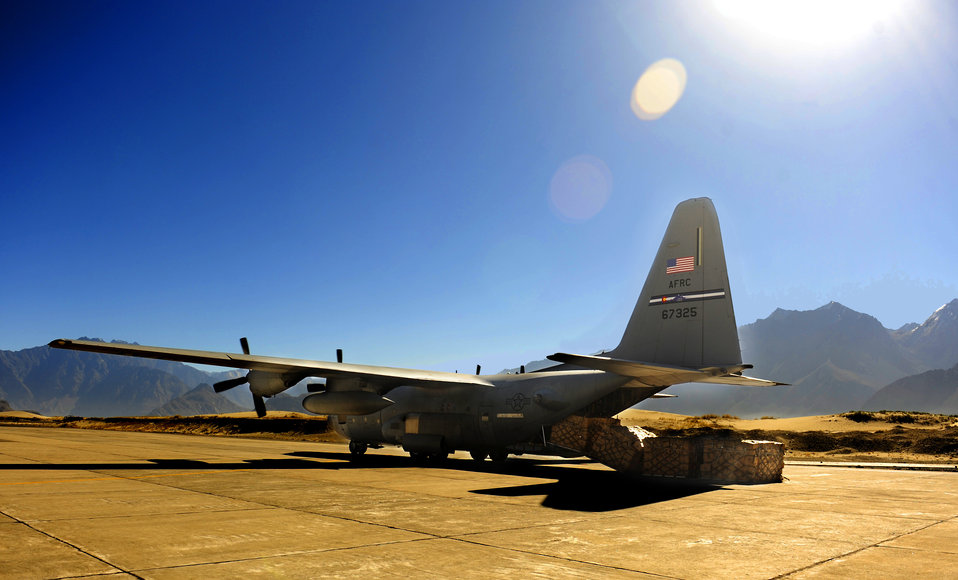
621st CRW

A C-130 Hercules is positioned to unload humanitarian aid supplies Oct. 3, 2010, at Skardu Airfield, Pakistan. U.S. military aircrews, worked in close coordination with the Pakistan military, transported more than 6.6 million kilograms of relief supplies and evacuated 21,000 people in the flood-affected regions of Pakistan during August and September.